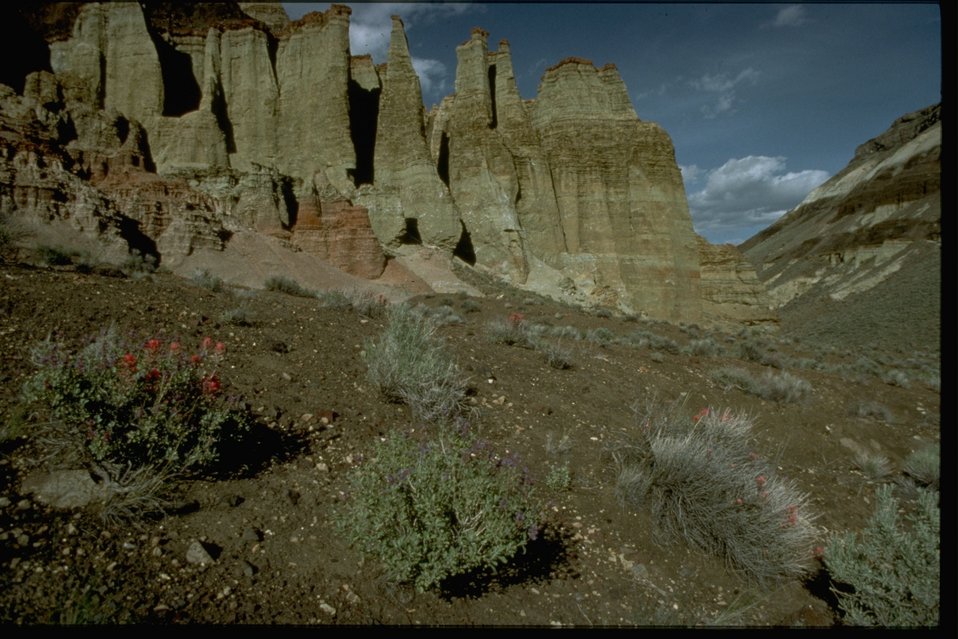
The Chuck Bluffs in the Lower Owyhee Canyon Wilderness Study Area. OR 3-110.